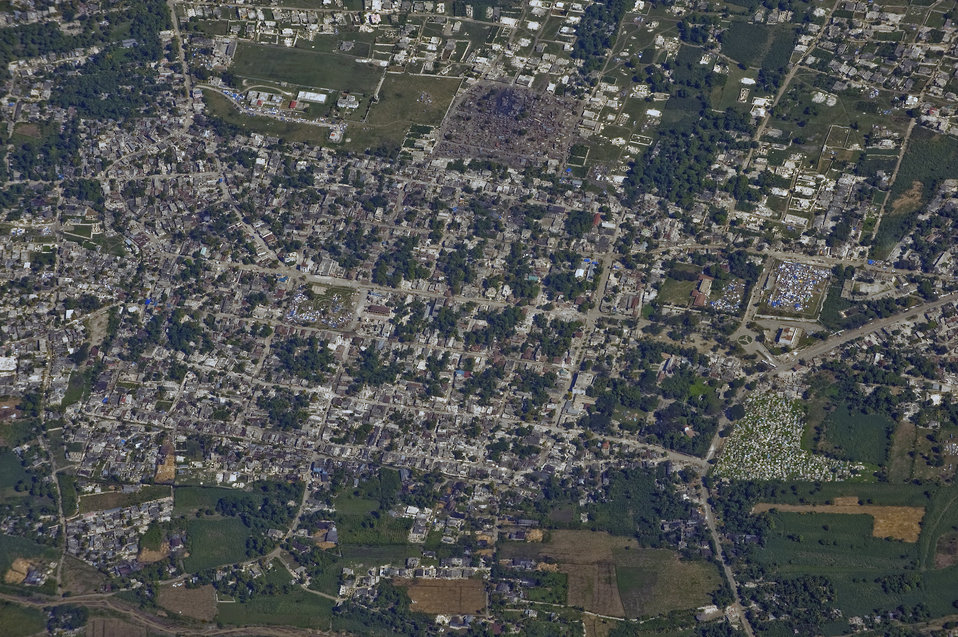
Haiti Observation

An aerial view of Port-au-Prince, Haiti from an OC-135B Observation Aircraft Jan. 14. The OC-135B flew over Haiti for over three hours taking panoramic photos to help coordinate U.S. military support to the Haiti relief effort.